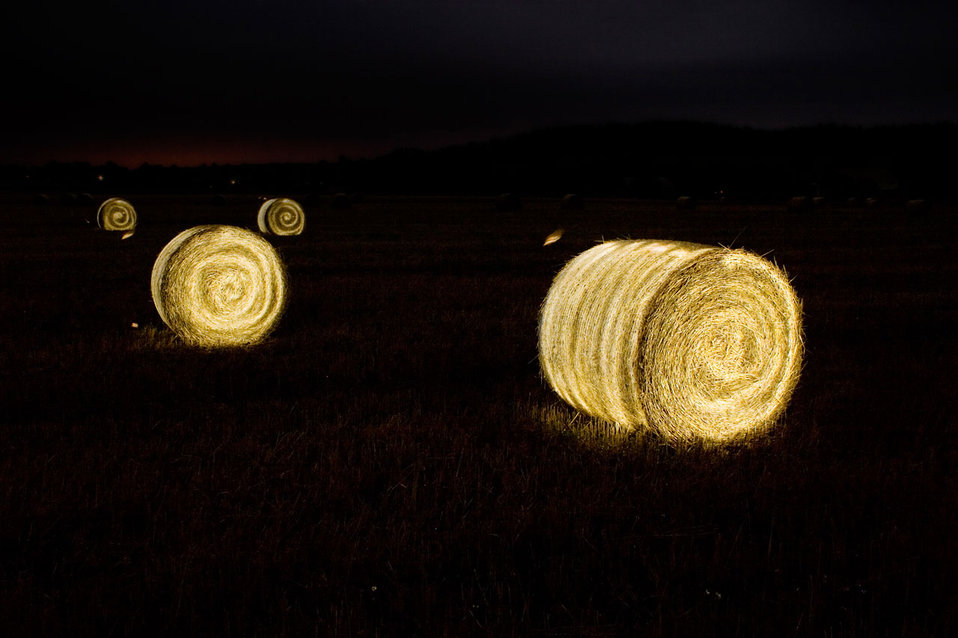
Illuminating straw bales

Straw bales on the field at night.